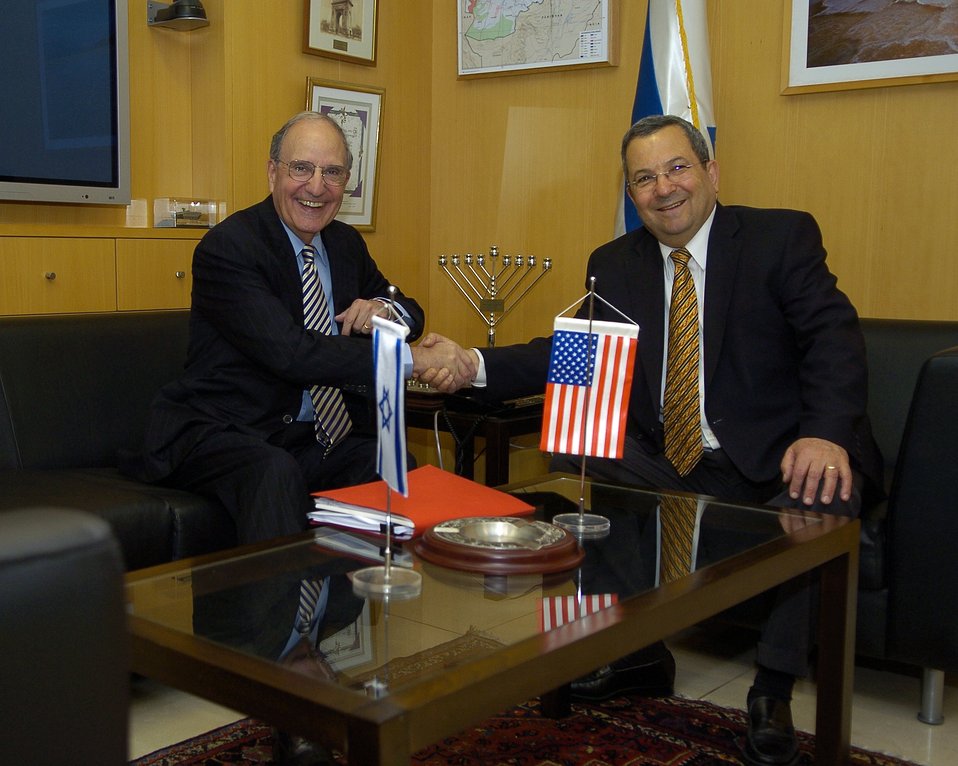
Israeli Defense Minister Ehud Barak and Special Envoy George Mitchell

Israeli Defense Minister Ehud Barak meets with Special Envoy for Middle East Peace George Mitchell at Hakirya, Tel Aviv, Israel, April 23, 2010.